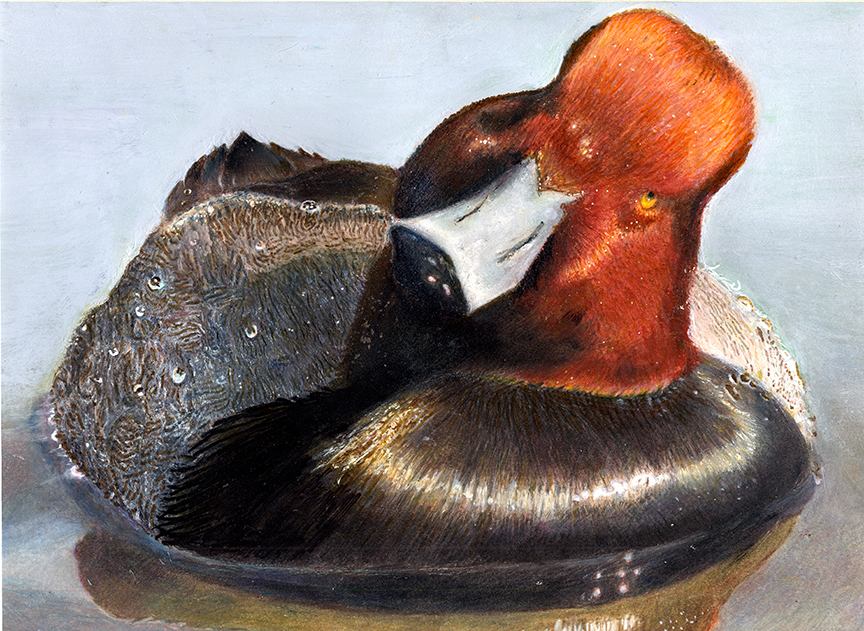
JRDuck2013SC

2013 Junior Duck Stamp Best of Show-South Carolina